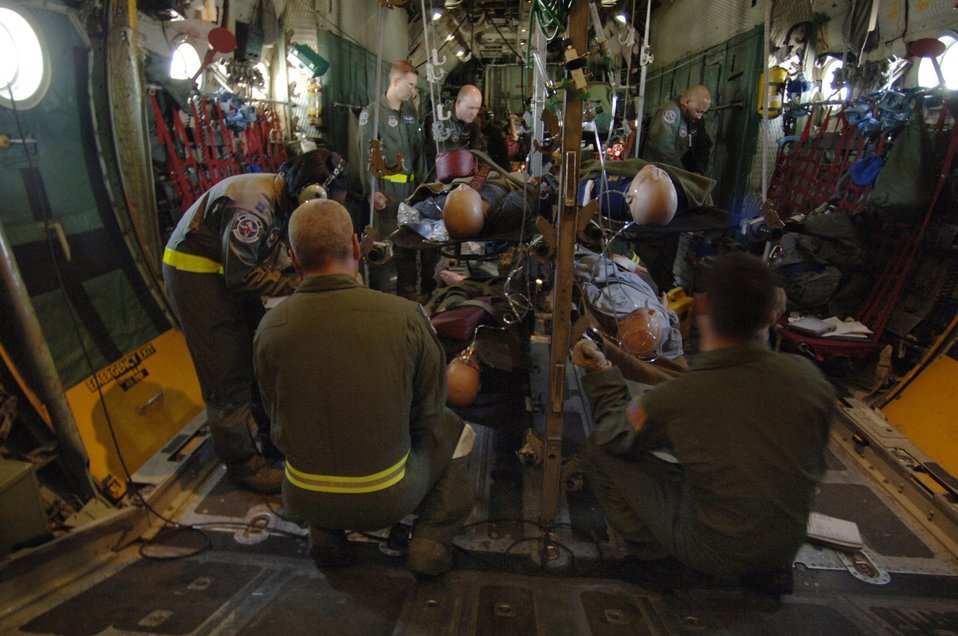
Medical professionals hone patient care skills

Flight nurses and medical technicians follow a checklist detailing how to properly secure patients and medical equipment for a potentially rough landing in preparation for an emergency landing training scenario Feb. 19 aboard a C-130 Hercules flying over southern Germany. The flight-qualified healthcare providers, assigned to the 86th Aeromedical Evacuation Squadron, fly weekly with the 37th and 38th Airlift Squadron's C-130 fleet to remain proficient in their skills.